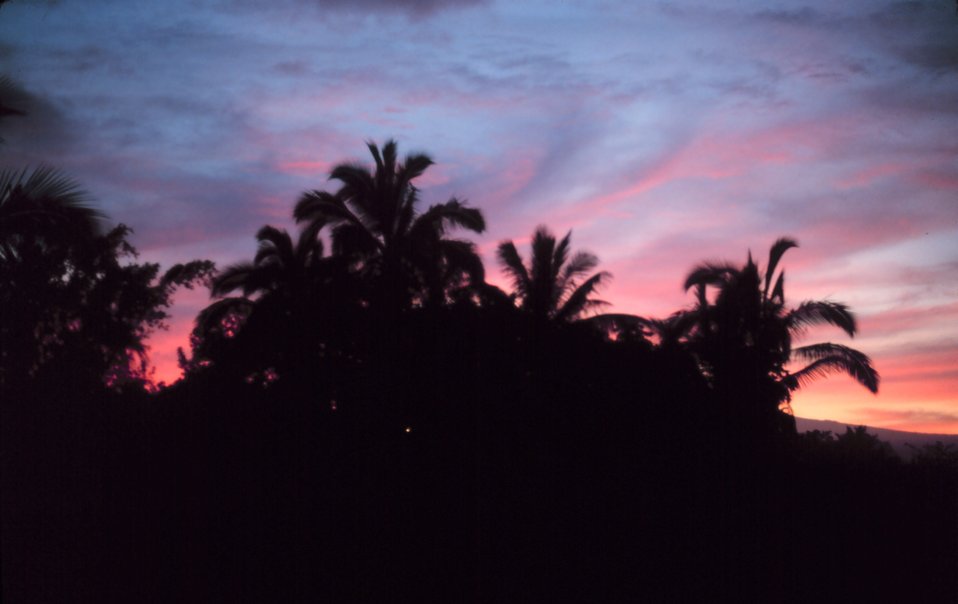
A Hilo sunset